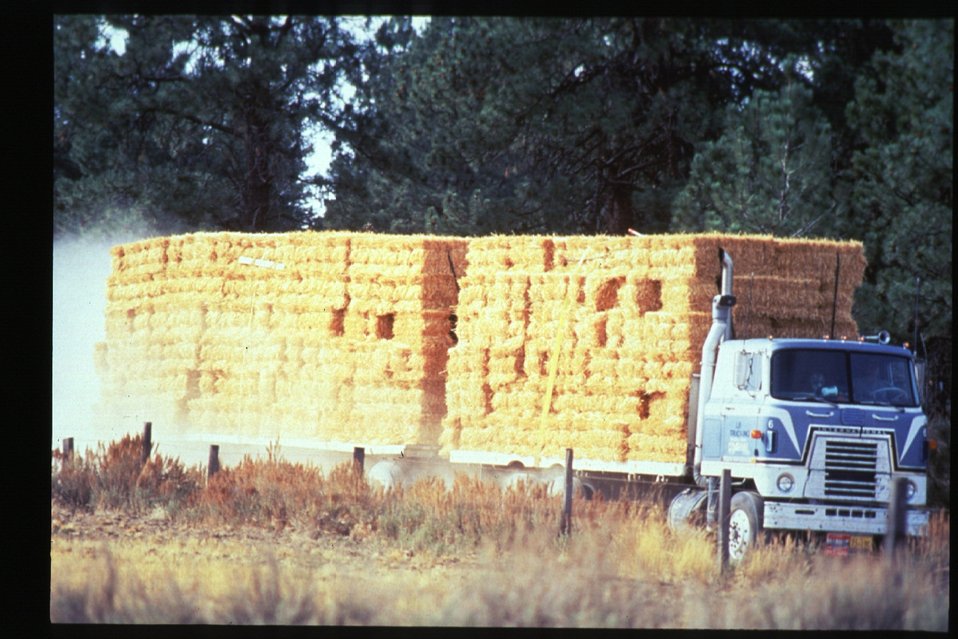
Boise Foothills Fire Danskin Mountains and South Fork of Boise River Four River Field Office LSRD Lower Snake River District